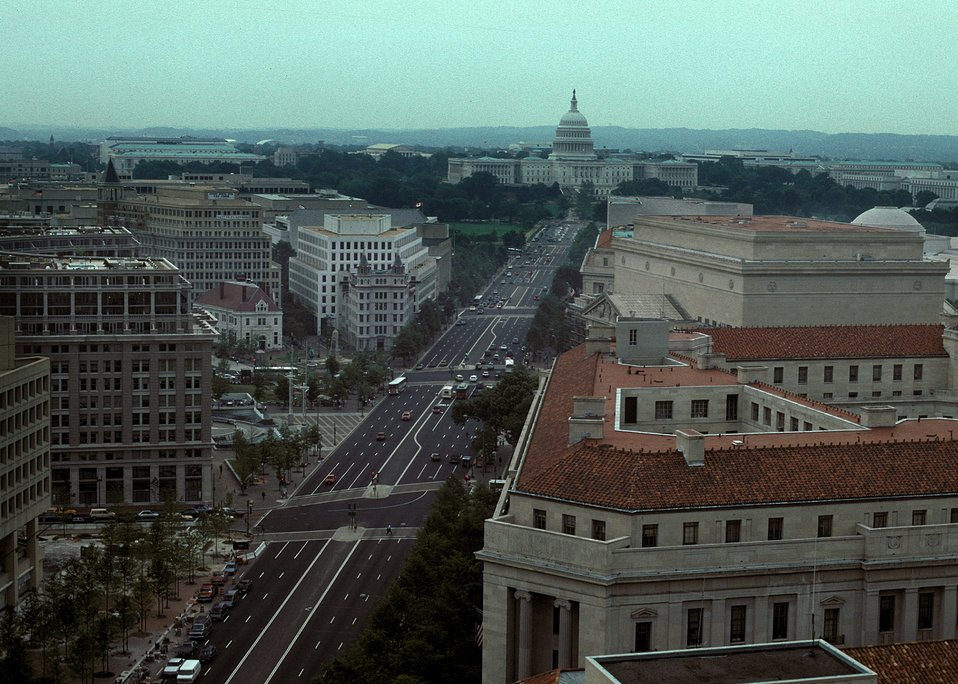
View of U. S. Capitol building at the end of Pennsylvania Avenue in Washinton DC.